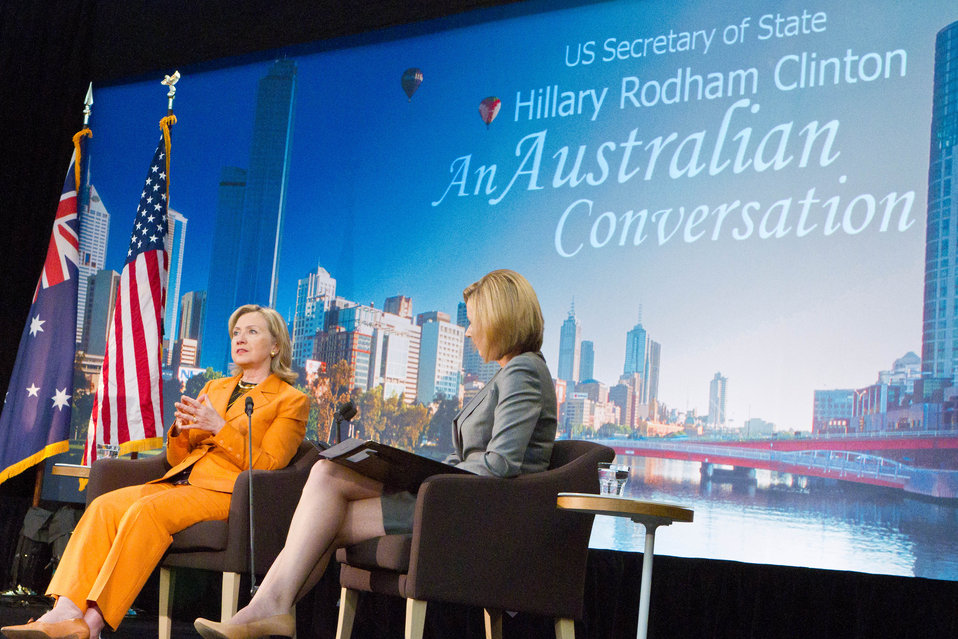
Secretary Clinton Responds to Questions

U.S. Secretary of State Hillary Rodham Clinton responds to questions during a Townterview with the Australian Broadcasting Company in Melbourne, Australia, on November 7, 2010.